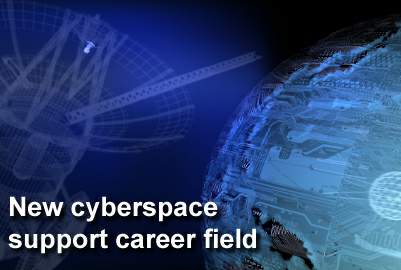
New cyberspace support career field stood up Nov. 1

Air Force officials converted more than 43,000 total force enlisted Airmen from former communications career fields to cyberspace support Nov. 1.